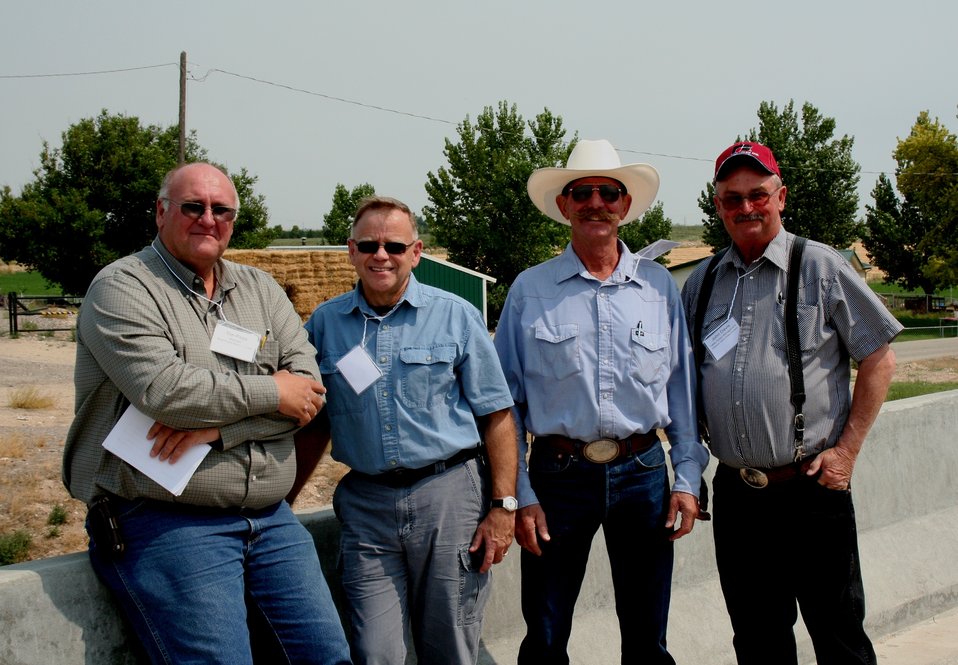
On the Road with Mike Taylor

FDA Deputy Commissioner Michael Taylor (center left) and colleagues started a five-day tour of the Pacific Northwest on Sunday, Aug. 11, 2013 -- visiting Idaho, Oregon and Washington -- to get a first-hand look at produce production and irrigation operations, and to discuss the proposed Produce Safety Rule with growers, food industry representatives and state officials. The FDA team visited the New York irrigation canal delivery system in Boise, Idaho. Irrigation districts deliver water via canals to farm acreage. Shown from left: Tim Page, manager of the Boise Project Board of Control, FDA Deputy Commissioner Michael Taylor, Vern Case, director of the Wilder Irrigation District, and John Davis of the Treasure Valley Grape Growers. For more about Mike's multi-region tour, read these FDA Voice blog posts:

• Hearing the Concerns of Maine Growers Striving for Agricultural Diversity
• On the Road with Mike Taylor: Touring the Pacific Northwest
• On the Road with Mike Taylor, Day 2: Frank Talk in Farm Country
• On the Road with Mike Taylor, Day 3: Families and Partnerships
• On the Road with Mike Taylor, Day 4: Looking to the Future